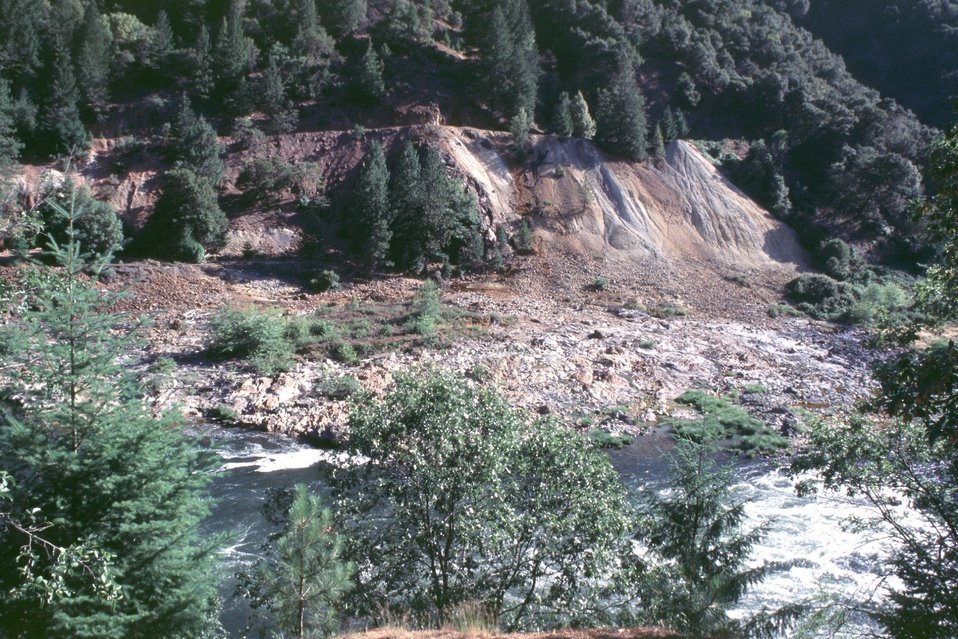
Almedia Mine, Medford District. Camouflaged Aquafix.